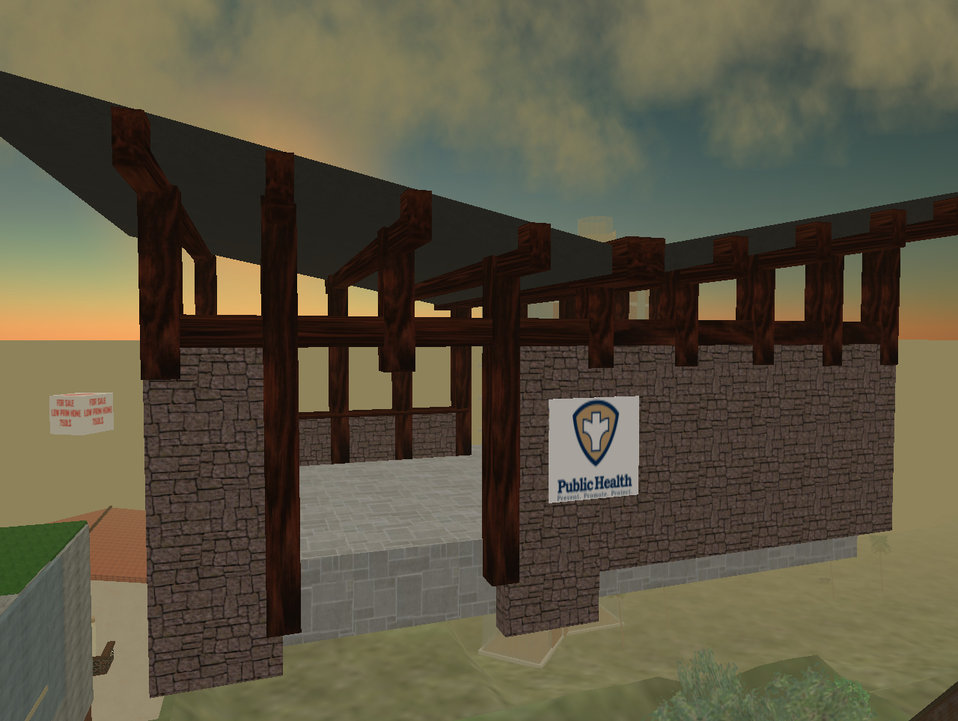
CDC's presence in the online virtual world 'Second Life' launched in August, 2006. Dr. John Anderton designed the initial CDC space using in-world, i.e., Second Life, tools, creating hyperlinks to CDC websites including the MMWR, CDC.gov homepage, CDC podcasts and the Public Health Image Library, PHIL. CDC public health posters from the first 6 decades of the CDC's existence were displayed in the 'Public Health Poster of the Week' billboard feature, which was updated weekly from August, through the end of December, 2006.